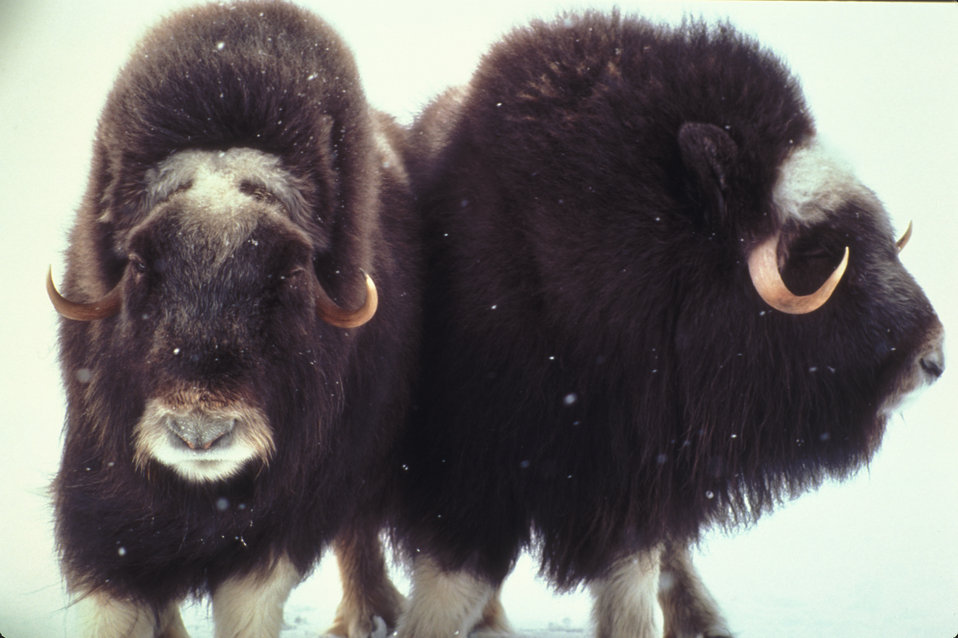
musk ox pair

Nunivak Island, AK